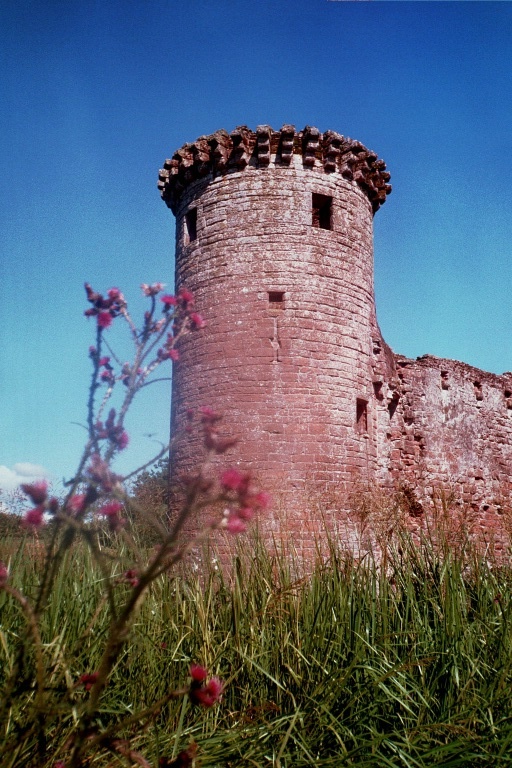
Caerlaverock Castle, near Dumfries, south-west Scotland